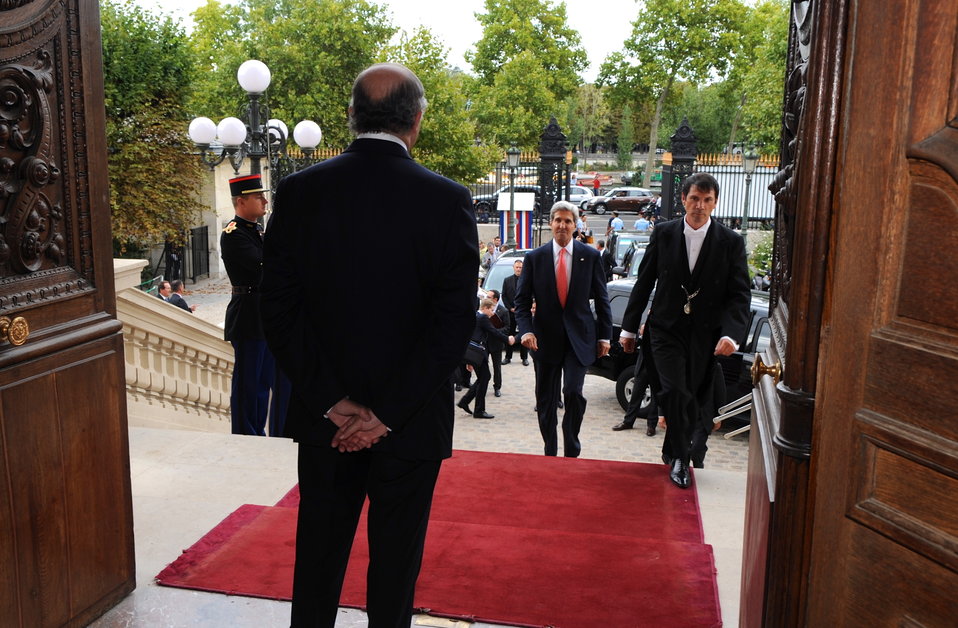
French Foreign Minister Fabius Greets Secretary Kerry

French Foreign Minister Laurent Fabius greets U.S. Secretary of State John Kerry as he arrives at the French Ministry of Foreign Affairs in Paris, France on September 7, 2013.